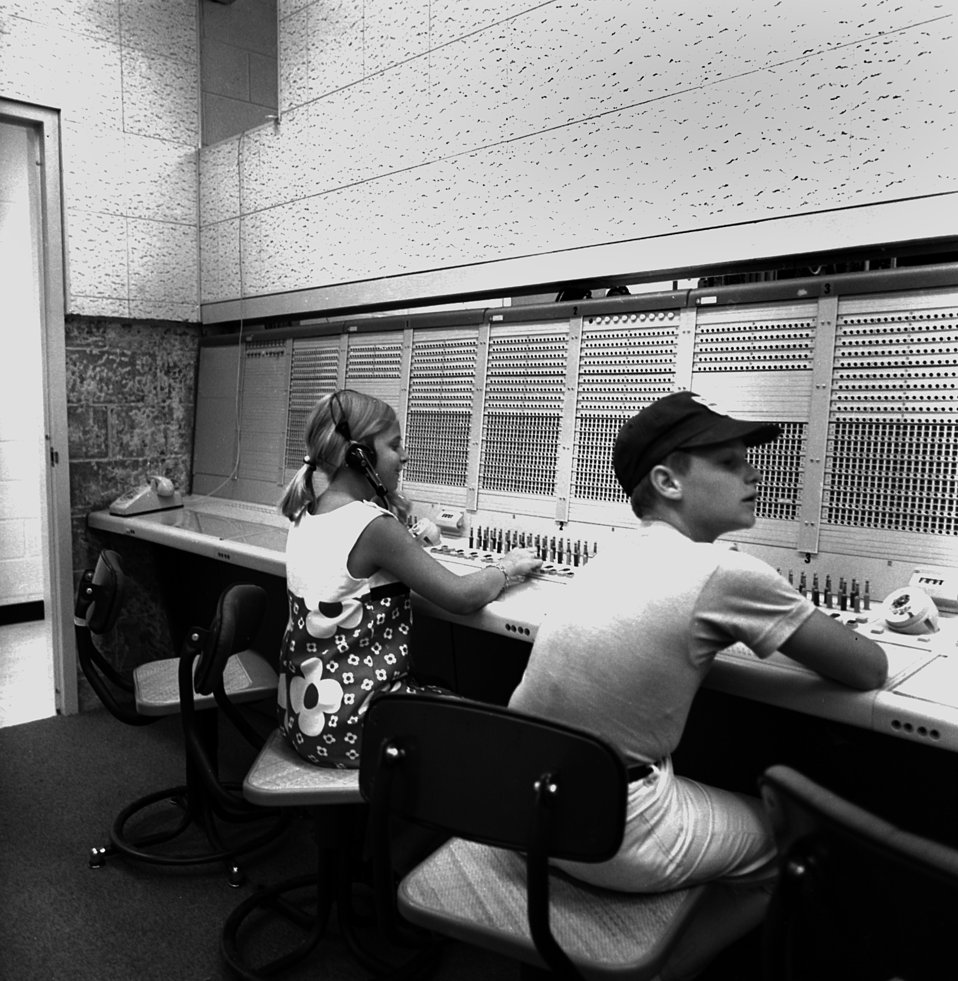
Formal Dedication New AEC (Atomic Energy Commision) - FOB (Federal Office Building) Oak Ridge

70-173g DOE Photo by Frank Hoffman
Formal Dedication New AEC (Atomic Energy Commision) - FOB (Federal Office Building) Oak Ridge Tennessee 6-27-1970